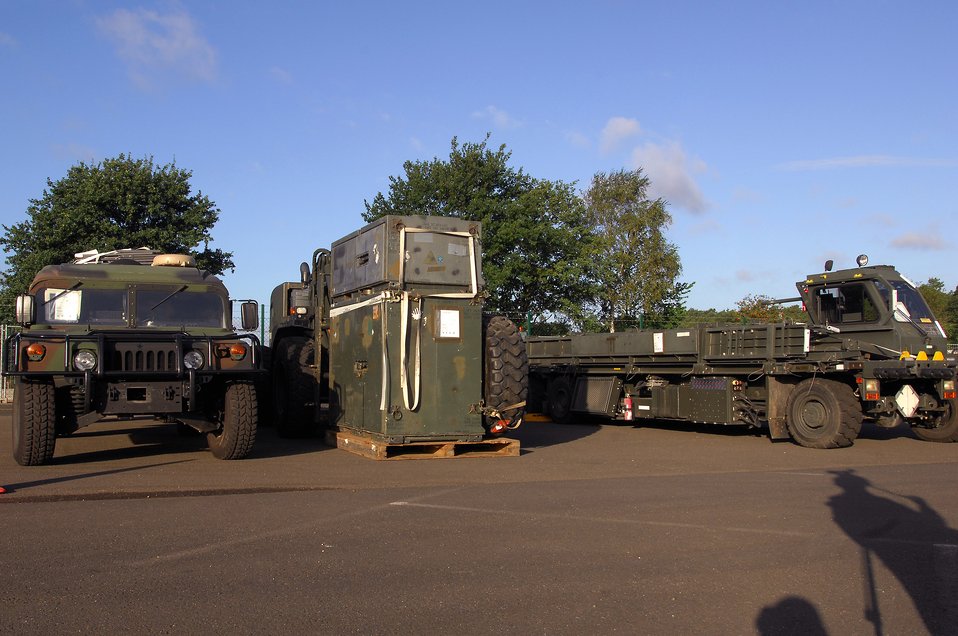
435th Logistics Readiness Squadron prepares for Georgia

Airmen from the 435th Logistics Readiness Squadron at Ramstein Air Base, Germany, prepare vehicles and equipment Aug. 13 for a humanitarian relief mission heading to the country of Georgia.